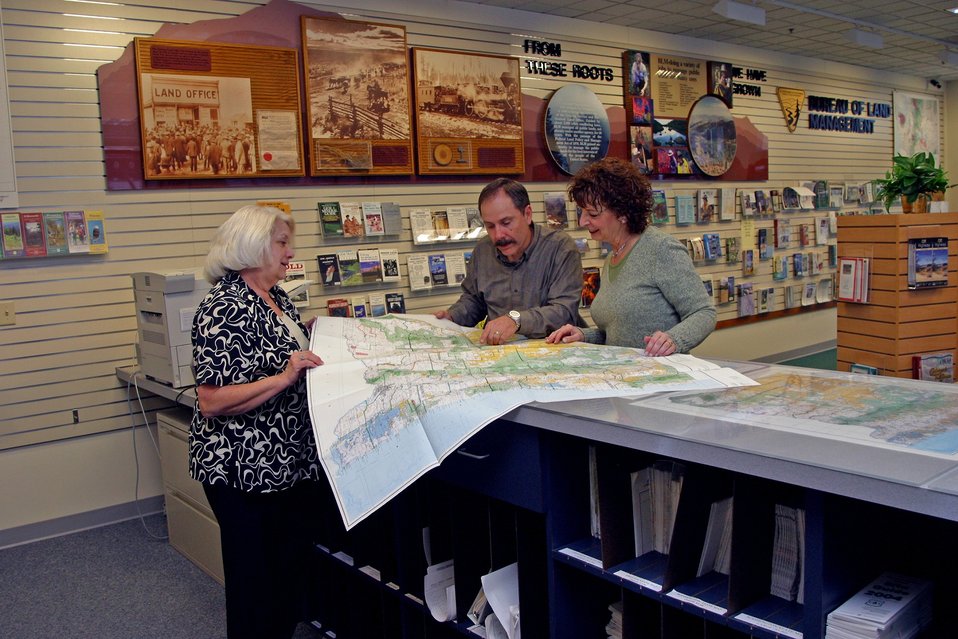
BLM's Land Office provides information about land status, minerals, maps, and general information to the public.